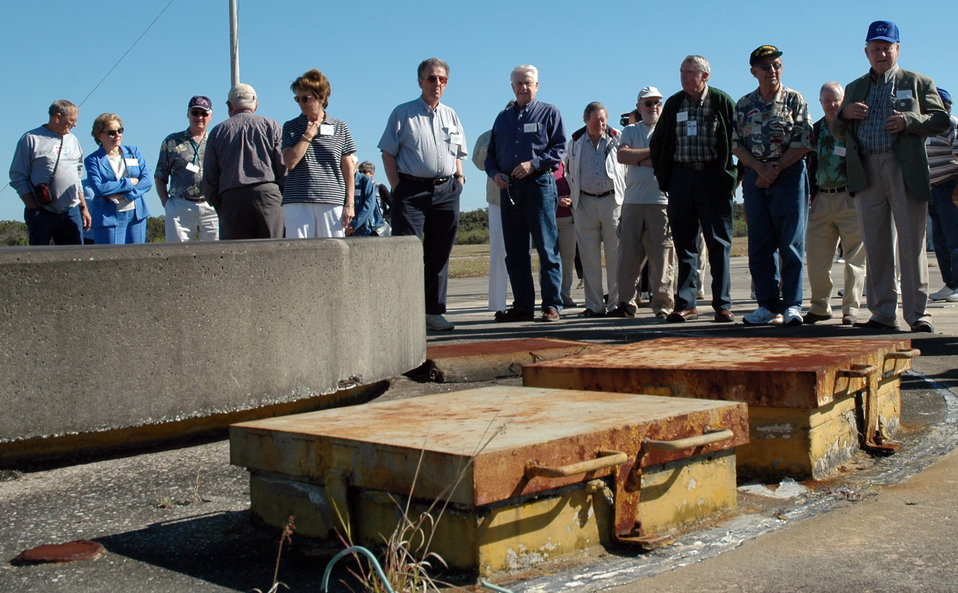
Minuteman reunion at Cape Canaveral

CAPE CANAVERAL AIR FORCE STATION, Fla. (AFPN) -- Retired missileers and their family members reminisce at Complex 31 during a reunion Feb. 1 marking the 45th anniversary of the first launch of an Air Force Minuteman missile. The silo at Complex 31 now serves as the burial vault for the Space Shuttle Challenger.